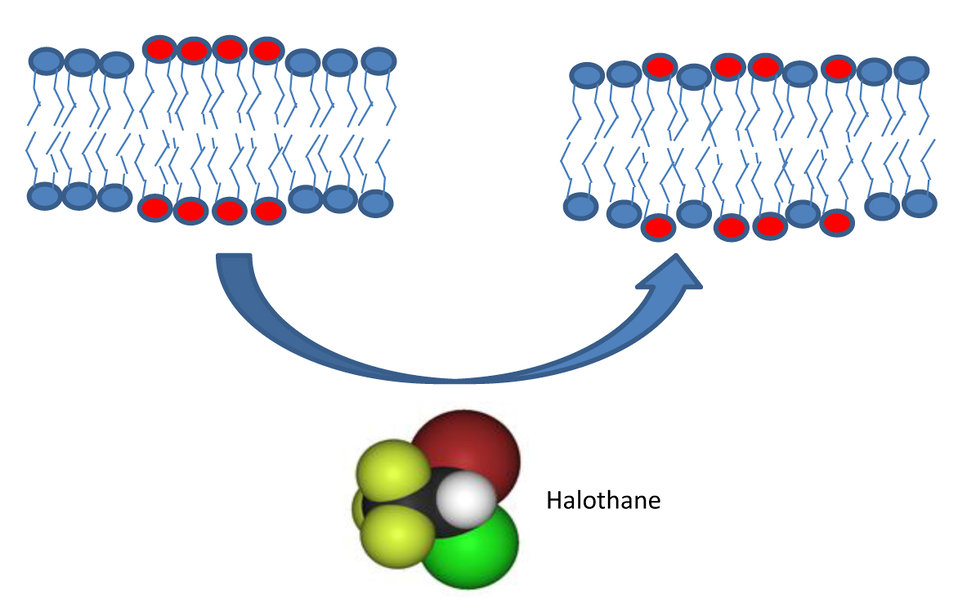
Anesthesia

Different lipid molecules in the cell membrane separate out into an ordered region (red) and surrounding disordered regions (blue). Inhalation anesthetic molecules such as halothane cause these lipid regions to mix, potentially affecting the function of ion channel proteins found imbedded in the membrane.